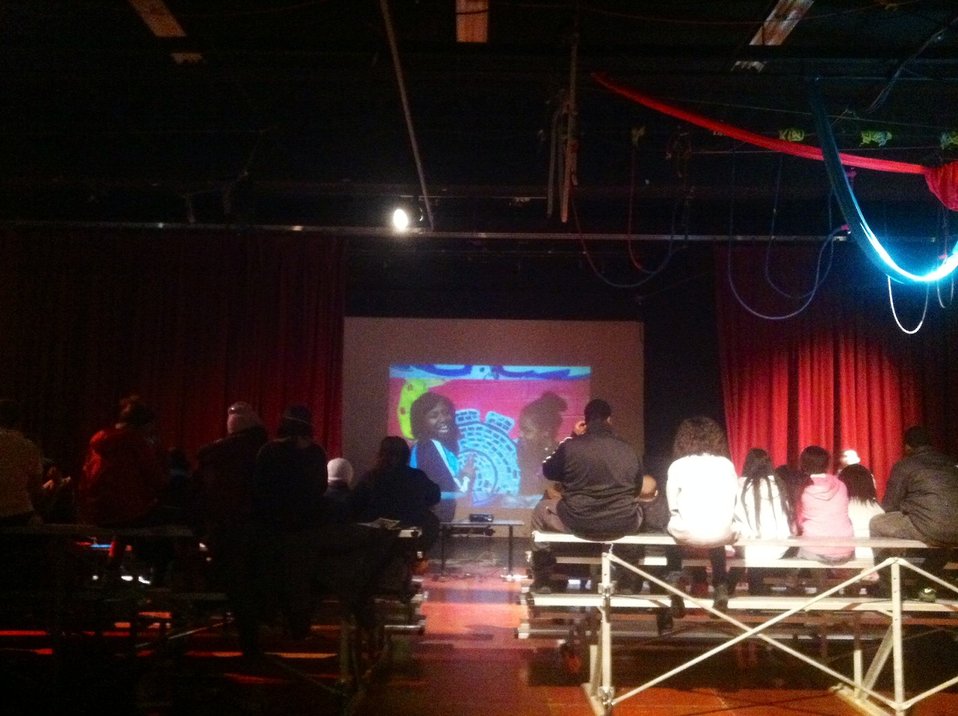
Youth Empowerment Program Poetry Slam held at Alternatives on Jan. 30 which was held to observe National Drug Facts Week and support youth in making healthy lifestyle choices.